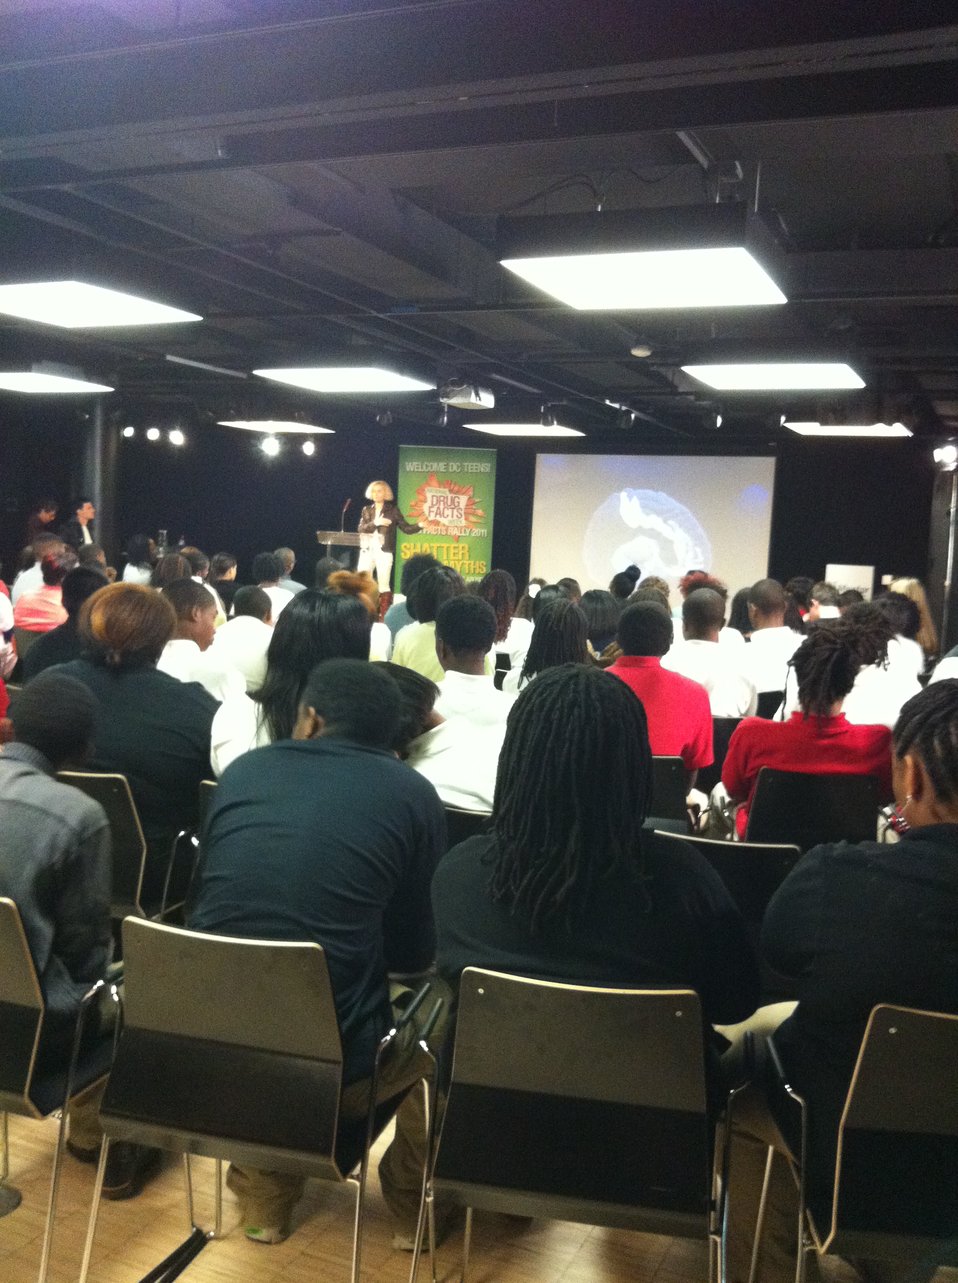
Mentor 6